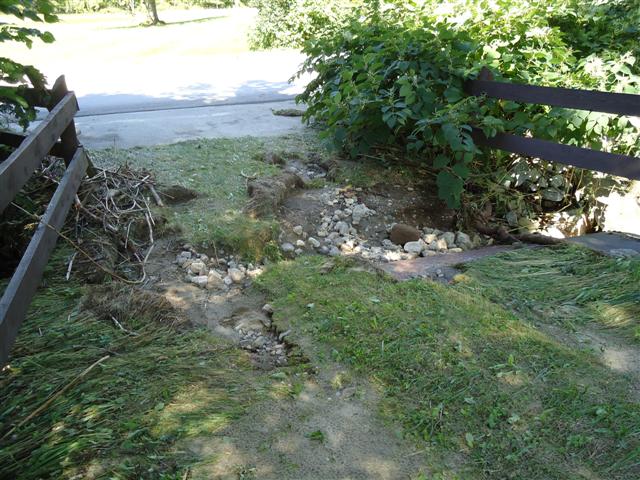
Storm damage at Eisenhower National Fish Hatchery in Vermont

Culvert and secondary road overwash.